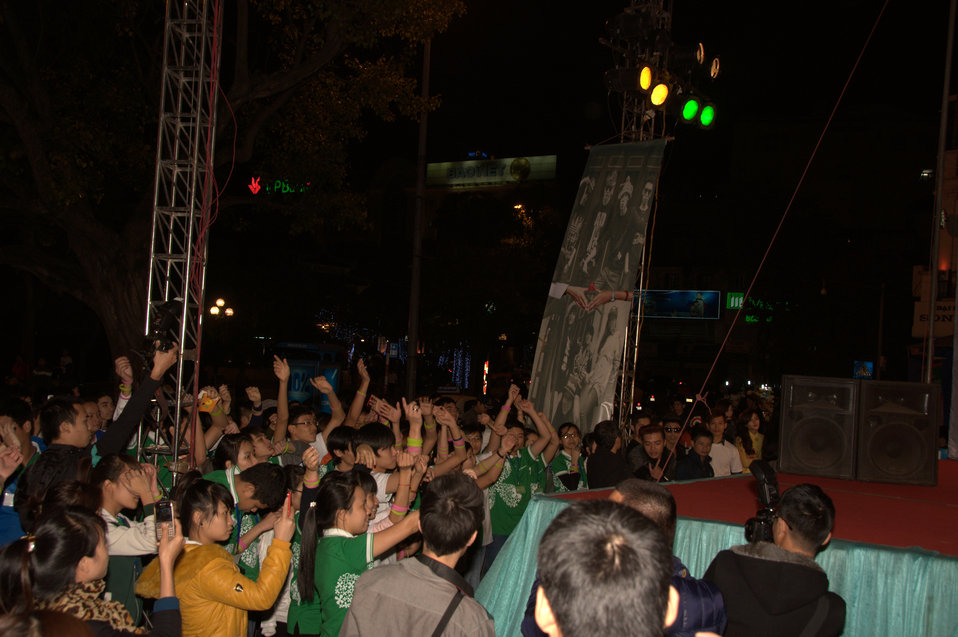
USAID and PEPFAR supports an outdoor concert to promote Vietnam's national action month for HIV

Hanoi, December 18, 2012.